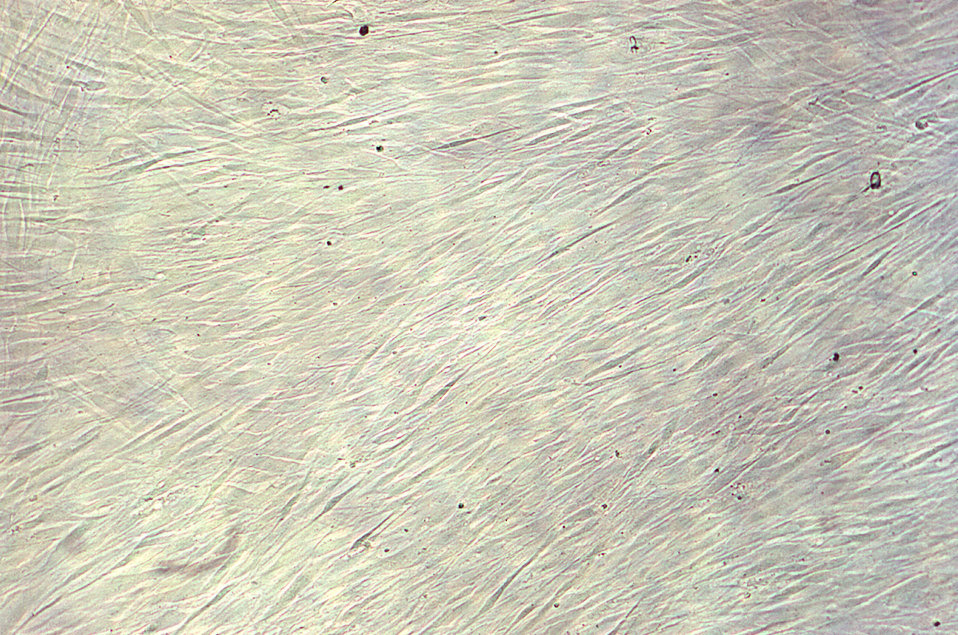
Magnified 100X, this photomicrograph revealed some of the cytoarchitectural morphology found in a section of normal newborn human foreskin tissue, which had been extracted from a fibroblast tissue culture.